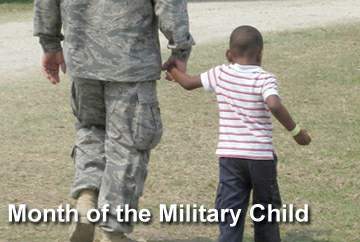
Air Force Services officials launch Month of the Military Child programs

In recognition of military children and their families, Air Force Services officials are highlighting a variety and scope of programs in partnership with base agencies for Month of Military Child and Year of the Air Force Family.